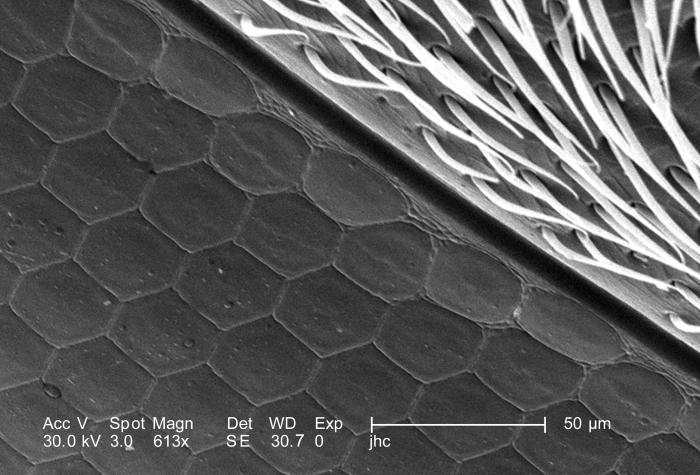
Under a magnification of 613X, approximately 4X greater than PHIL 10101, this scanning electron micrograph (SEM) depicted the surface of the left compound eye of an unidentified hornet found in the suburbs of Decatur, Georgia. This eye was one of a pair, which along with other sensorial structures such as the hair-like 'setae', seen here coating the insect's head, provided the hornet with data indicative of changes encountered in its environment such as chemical, thermal, and tactile queues.